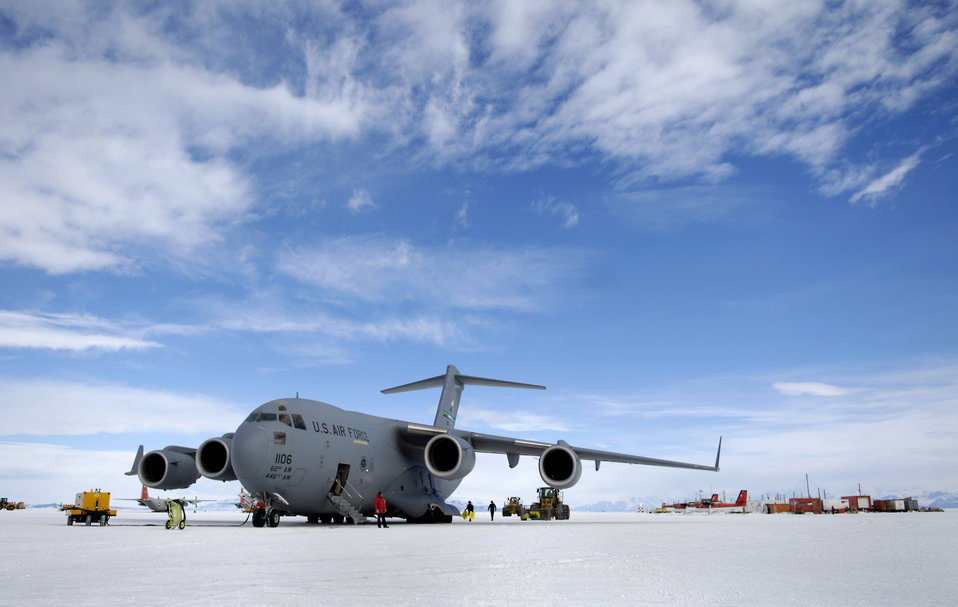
Ice, ice baby!

A C-17 Globemaster III is offloaded on the annual sea ice runway Nov. 26 near McMurdo Station, Antarctica, during Operation Deep Freeze. C-17s fly large cargo loads from Christchurch, New Zealand, to Antarctica while the LC-130 Hercules, stationed at McMurdo, fly smaller cargo loads to research posts throughout the continent. The C-17s from McChord Air Force Base, Wash., and ski-equipped LC-130s from the New York Air National Guard's 109th Airlift Wing are supporting the 13th Air Force-led Joint Task Force Support Forces Antarctica, Operation Deep Freeze. Operation Deep Freeze is a unique joint and total force mission that has supported the National Science Foundation and U.S. Antarctic Program that began in 1955.